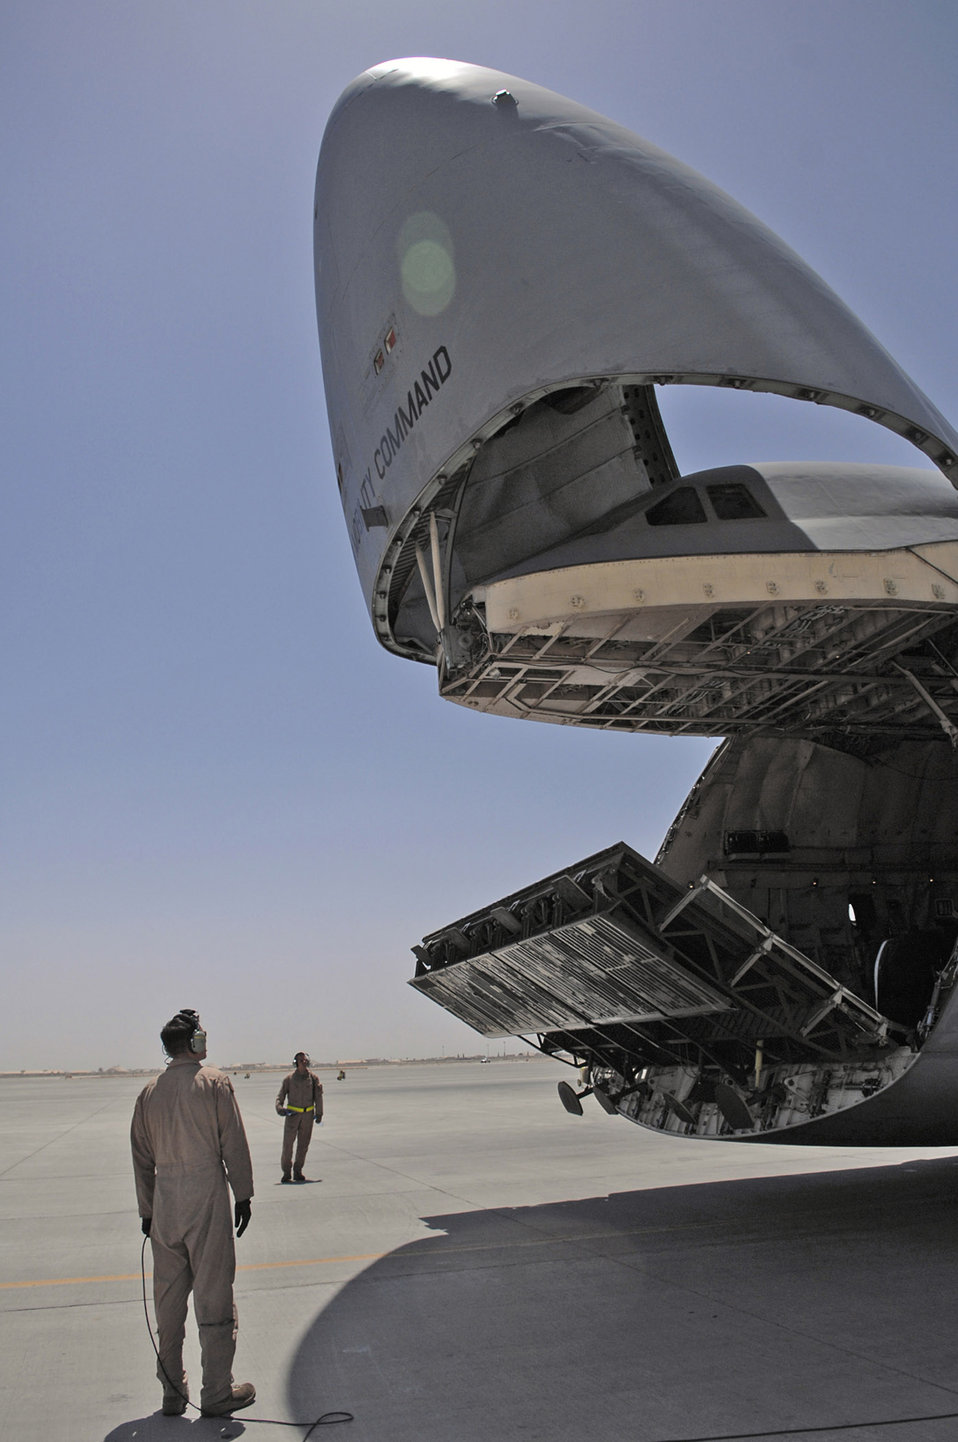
Open wide

Tech. Sgt. Kurt Nemecek watches as the ramp of a C-5 Galaxy is lowered to load two Army Stryker Infantry Carrier Vehicles June 25 at Joint Base Balad, Iraq. The C-5 can carry all of the Army's air-transportable combat equipment. Sergeant Nemecek is a 9th Airlift Squadron flight engineer from Dover Air Force Base, Del.